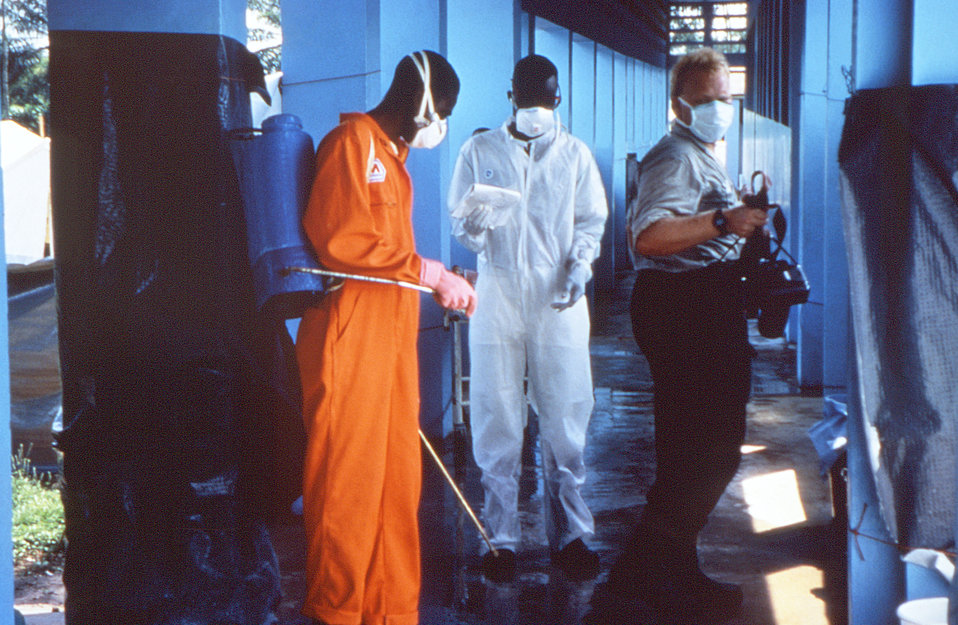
This image depicted sanitary procedures being practiced in a Kikwit, Zaire clinic during the country's 1995 Ebola outbreak.